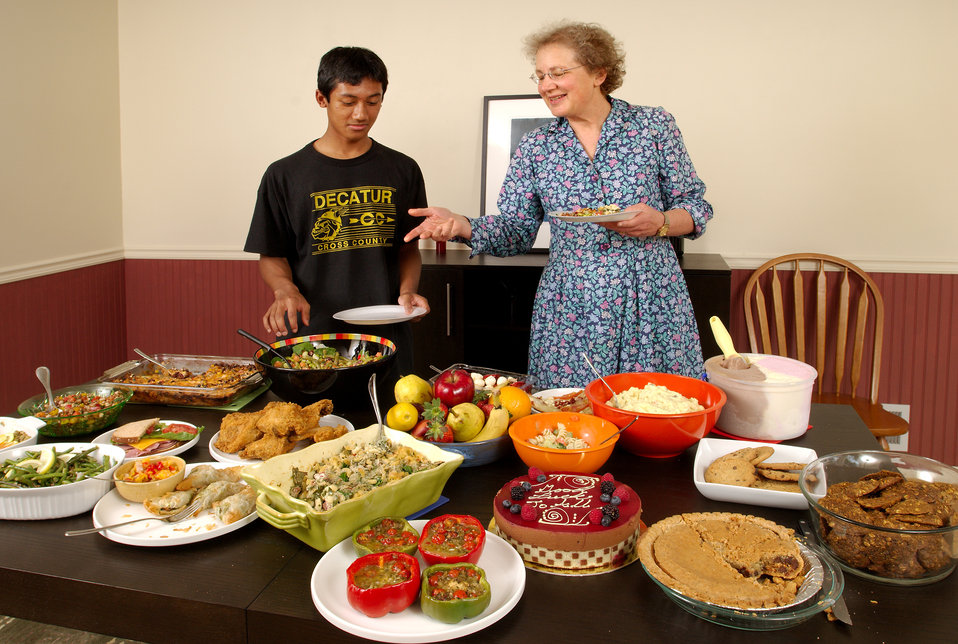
This young man and middle-aged woman were guests at a dinner party, and were discussing the foods set atop the dining table. Here, they were selecting items they'd consume at this gathering. The woman was pointing out some of the healthier choices available, where many different foods were on display. All these dishes looked quite tasty, but some were more nutrient-dense than others, while others were more calorie-dense than the rest.